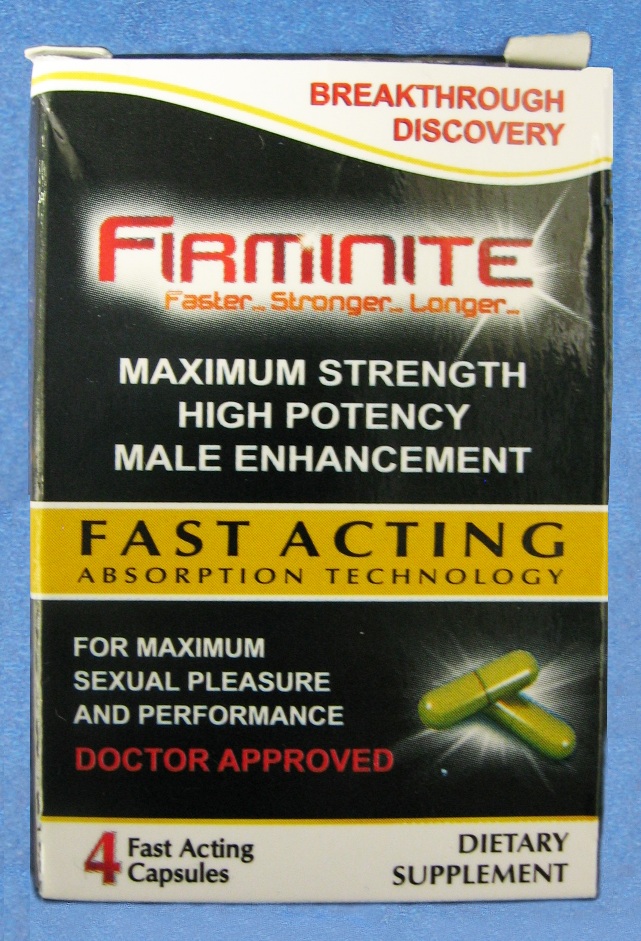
Firminite

March 18, 2012 - The FDA is advising consumers not to purchase or use 'Firminite,' a product promoted and sold for sexual enhancement. The product was found to contain undeclared tadalafil. For more information, go to www.fda.gov/Safety/Recalls/ucm304719.htm

And read this Consumer Update: Beware of Fraudulent ‘Dietary Supplements’